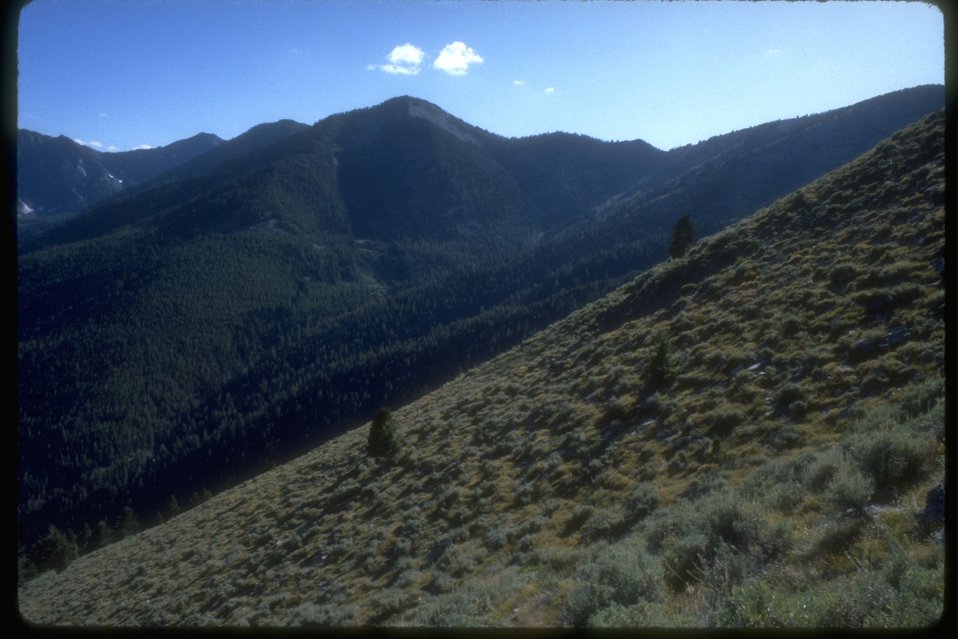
Scenic view of the forestlands on Huynt Mountain in the Elkhorns.